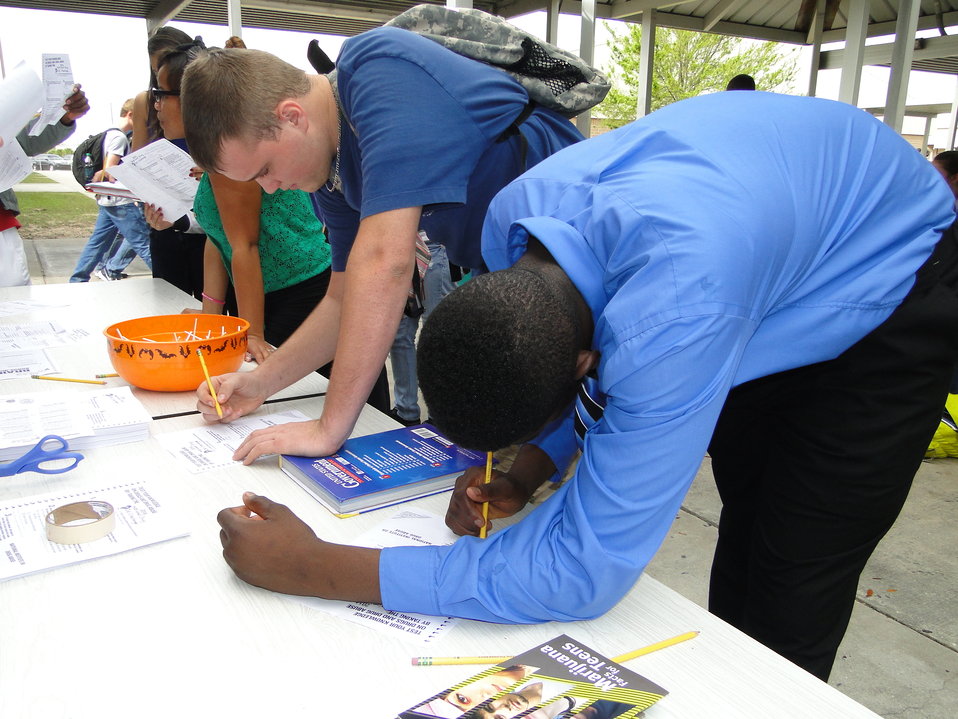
Sebring High School